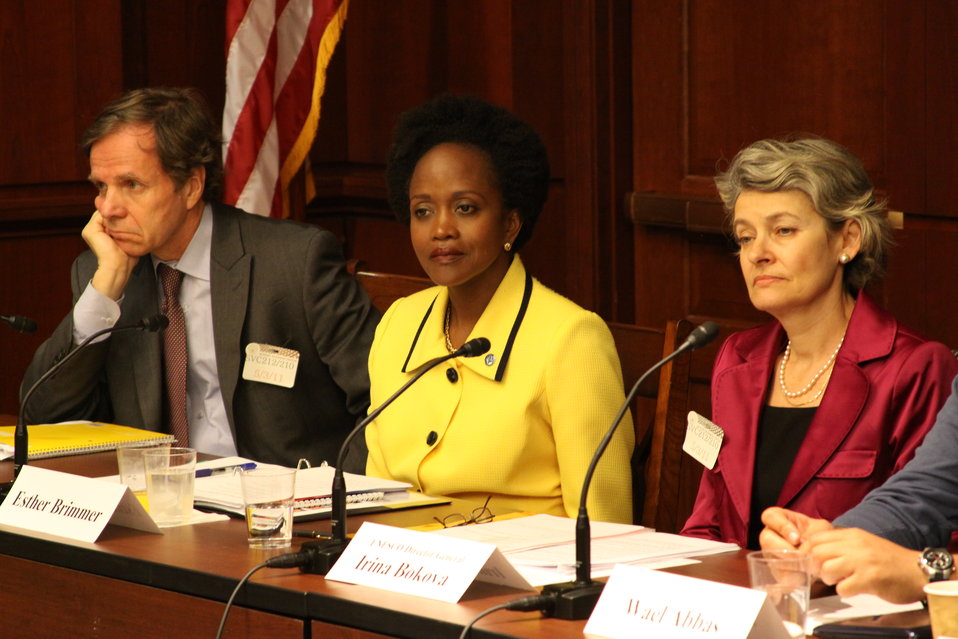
Ambassador Killion and Panel Participants Respond to Questions

Participants in the “Defending Press Freedom in the 21st Century” panel, including Assistant Secretary of State for Democracy, Human Rights, and Labor Michael Posner, left; Assistant Secretary of State for International Organization Affairs Esther Brimmer, center; and Irina Bokova, Director General for UNESCO, right; respond to questions at the U.S. Capitol in Washington, D.C., on May 3, 2011.